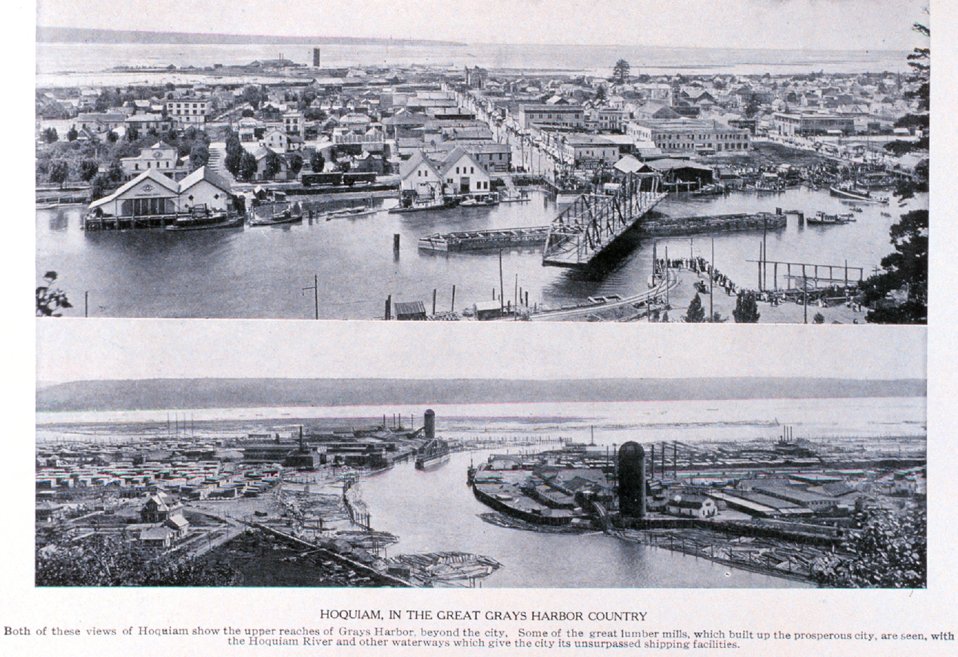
'Hoquiam, in the Great Grays Harbor Country'. In: 'Puget Sound and Western Washington Cities-Towns Scenery', by Robert A. Reid, Robert A. Reid Publisher, Seattle, 1912. P. 155.